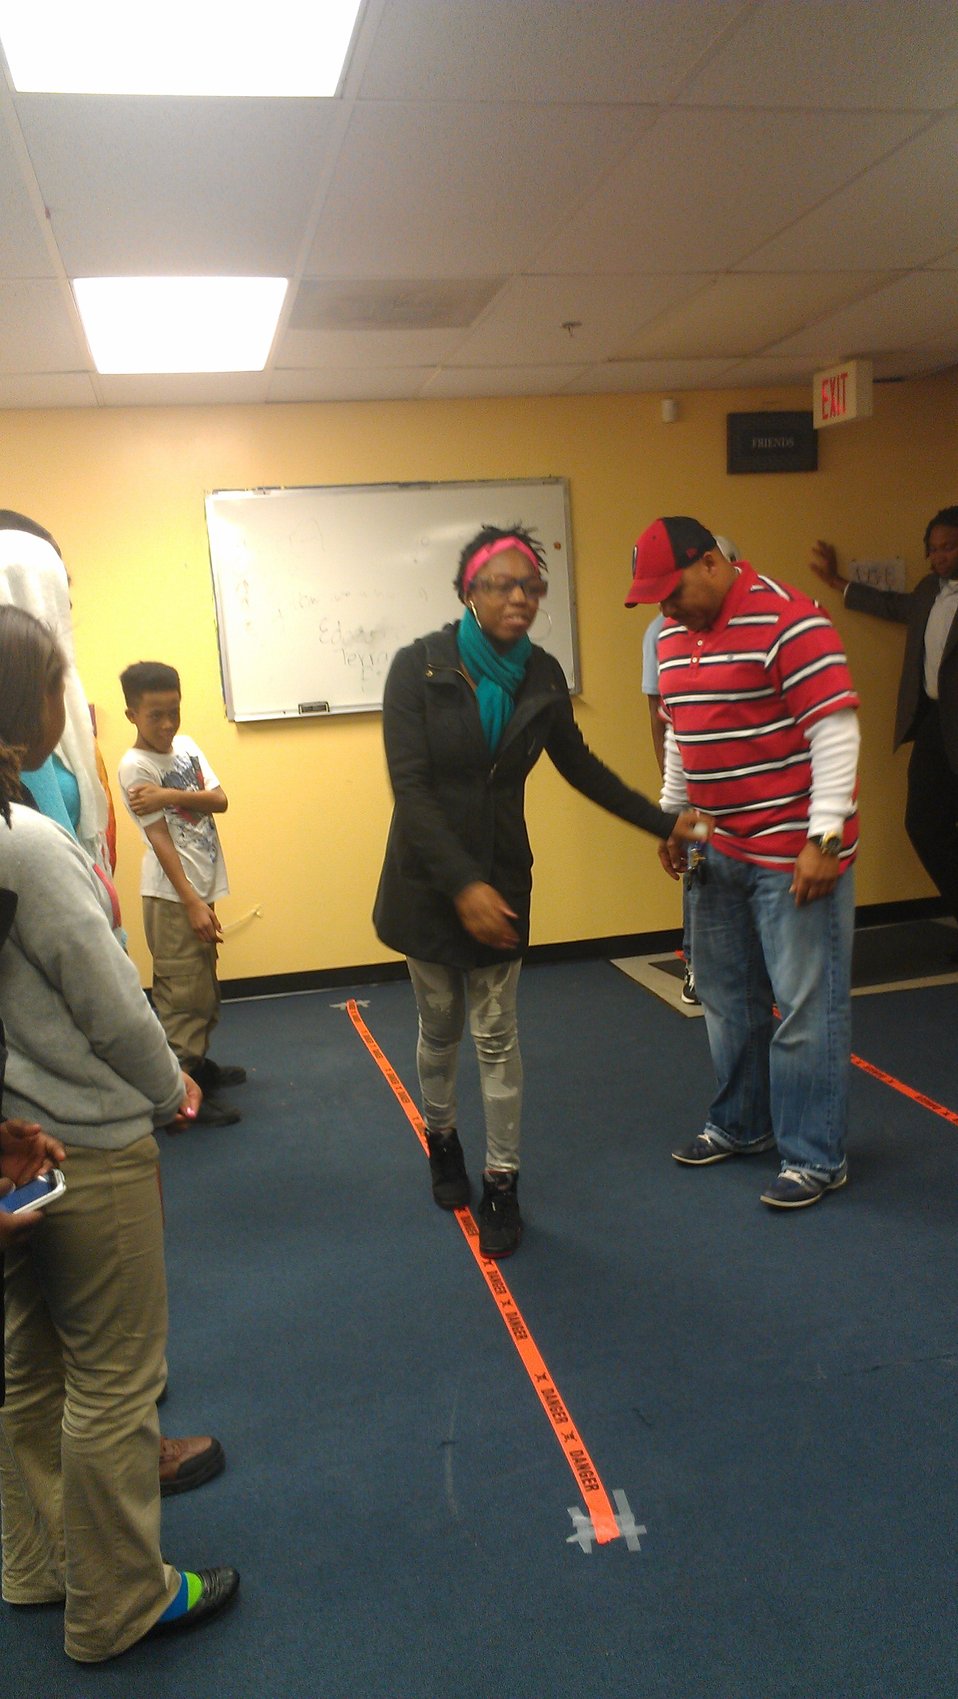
Washington, D.C. Youth, NDFW 2013

Sasha Bruce Youthwork, Inc. sponsor 2013 NDFW events for youth in Prevention Centers in Wards 5 & 6, Washington, D.C.